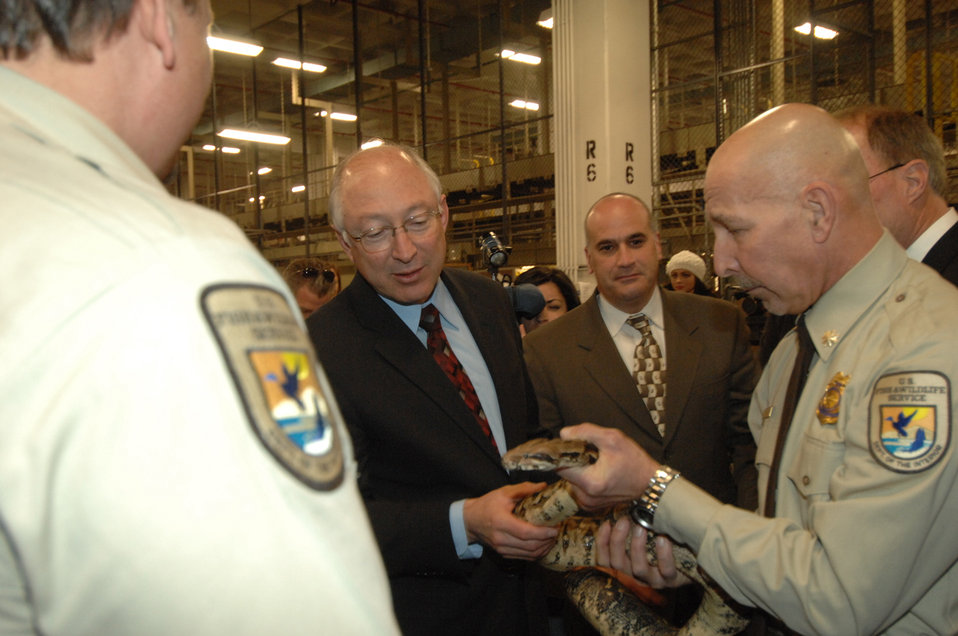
Secretary Salazar and a boa constrictor

On January 20, Secretary of the Interior Ken Salazar visited the Port of New York to announce that the U.S. Fish and Wildlife Service will propose to list the Burmese python and eight other large constrictor snakes that threaten the Everglades and other sensitive ecosystems as “injurious wildlife” under the Lacey Act.